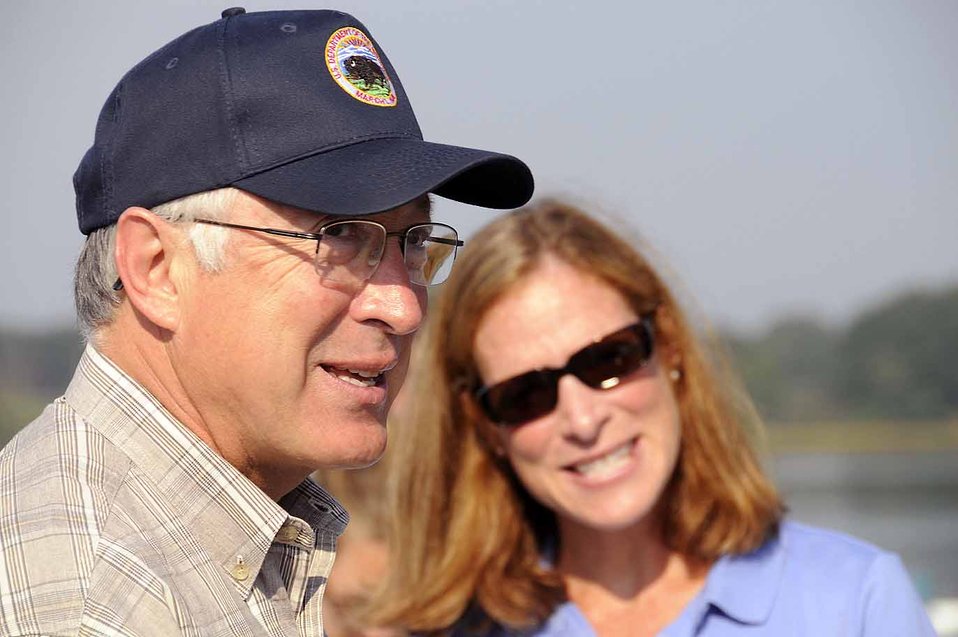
Secretary Salazar visits Great Bay

Secretary Salazar during a boat tour of Great Bay. In the background is Wendi Weber, Acting Regional Director, Northeast Region, U.S. Fish and Wildlife Service. Friday, August 19th, 2011.